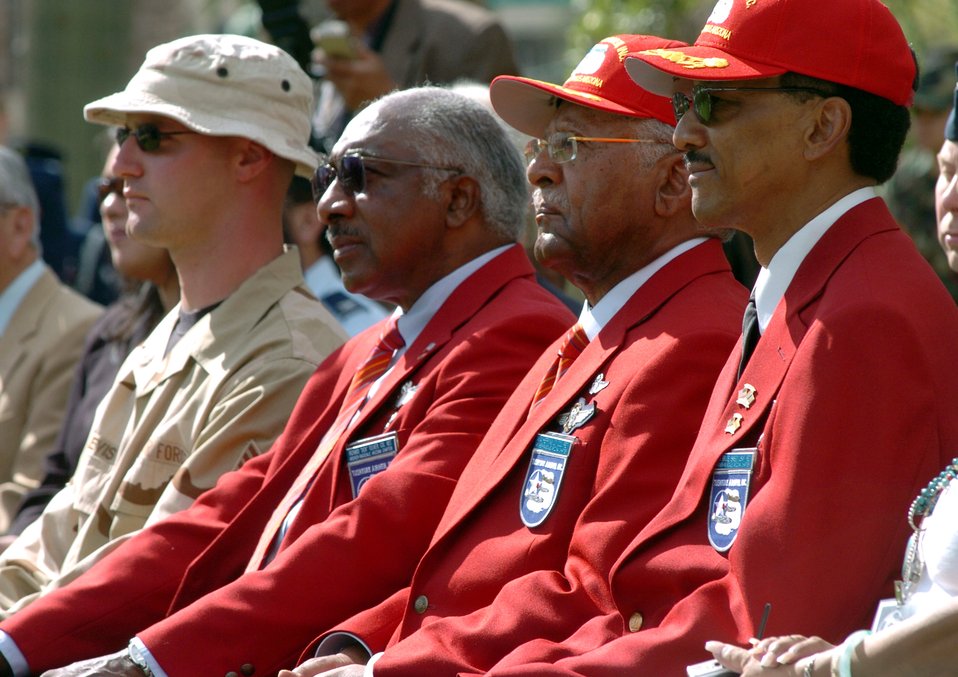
Air Force Week kicks off in Phoenix

Tuskegee Airmen were on hand to witness the reading of the proclamation declaring the week of March 19-25 Air Force Week in Phoenix. Several bus loads of Airmen from nearby Luke Air Force Base also joined Arizona state officials and Air Force senior leaders at the capital March 19 to kick off the event.